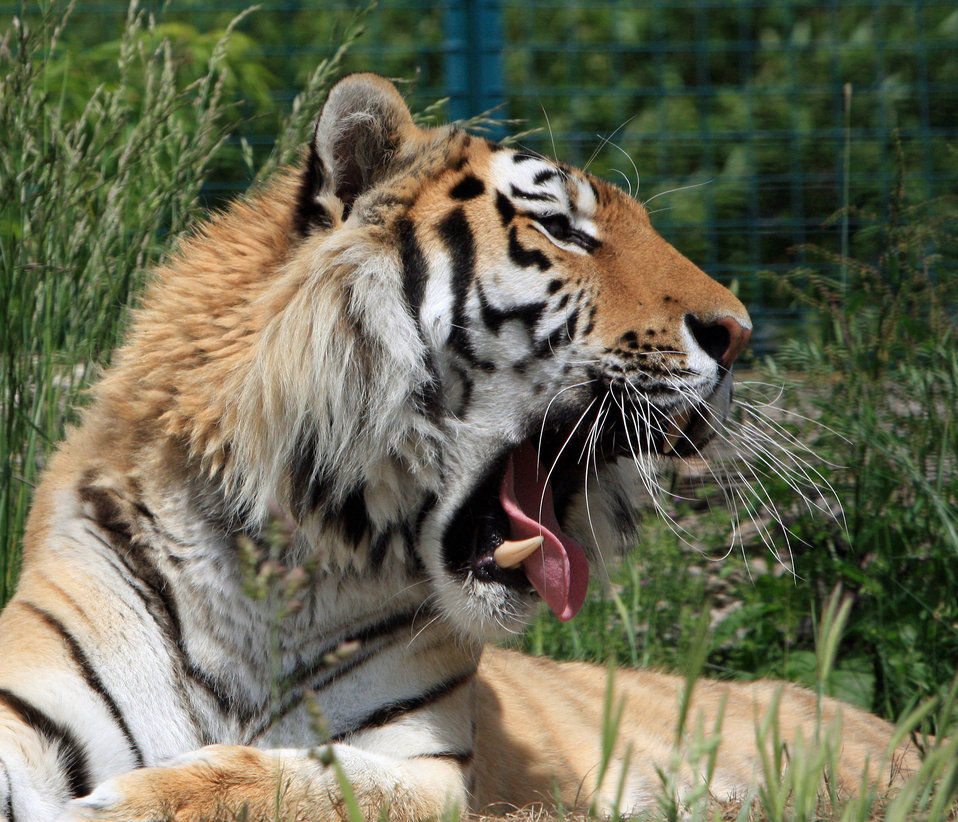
Tiger yawning

Close-up of a tiger yawning with mouth wide open.